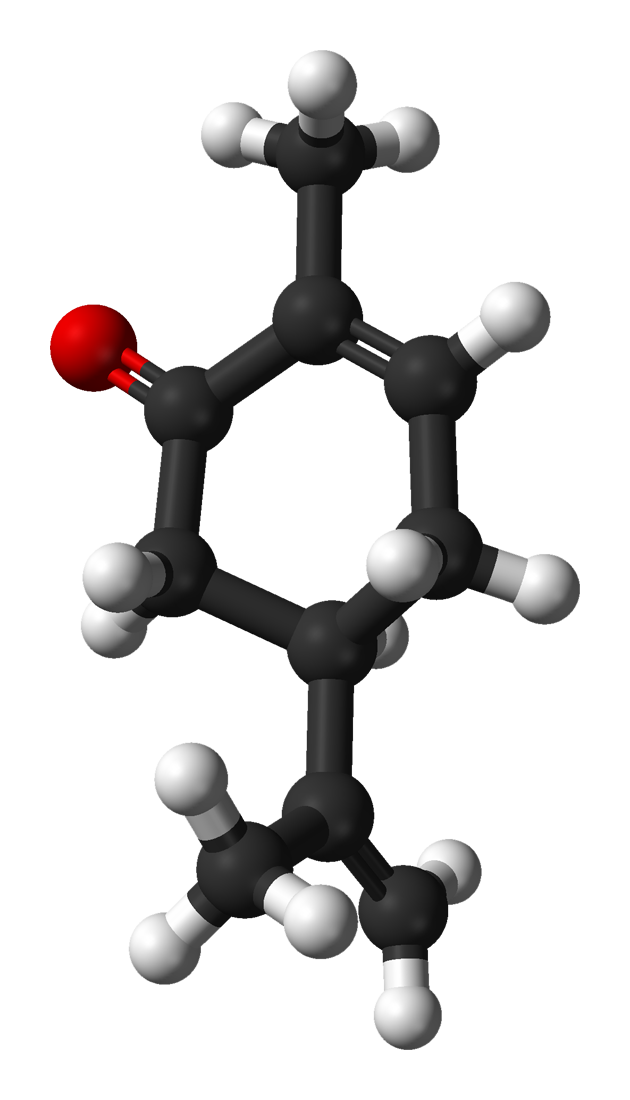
Ball-and-stick model of the (R)-(−) enantiomer of carvone (AKA L-carvone), as found in the crystal structure. X-ray crystallographic data from Acta Cryst. (1997). B53, 702-707. Model constructed in CrystalMaker 8.1. Image generated in Accelrys DS Visualizer.